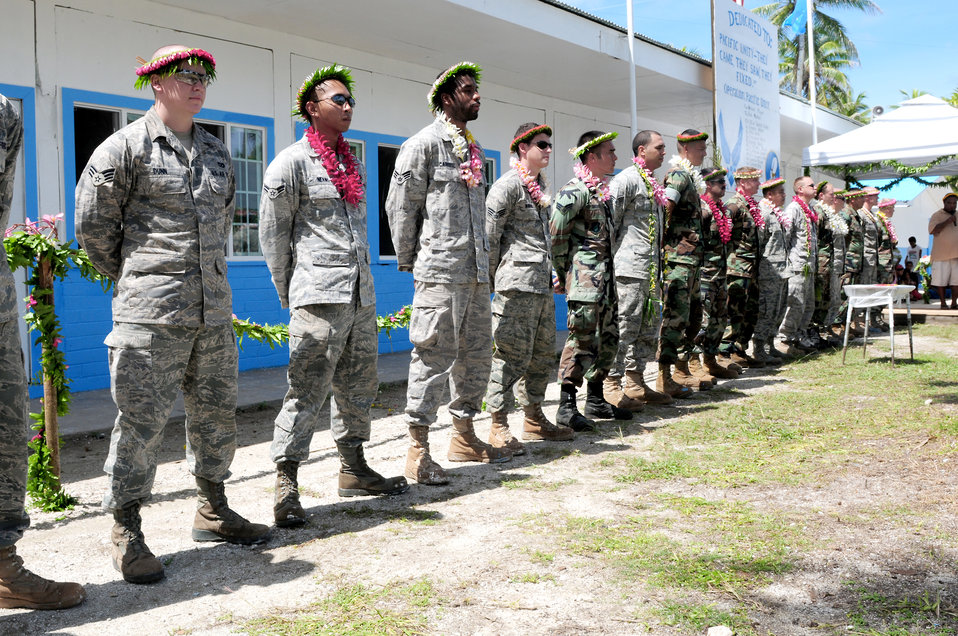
One month of construction

Members of the Pacific Unity engineering team, made up of U.S. Air Force engineers from Yokota, Japan, and U.S. Navy Seabees from San Diego, Calif., are recognized during a dedication ceremony Sept. 22, 2010, in Yap, Federated States of Micronesia. Pacific Unity is a humanitarian civil engineering effort in which 18 engineers completely rebuilt, remodeled and repainted a high school on a remote island in Micronesia.